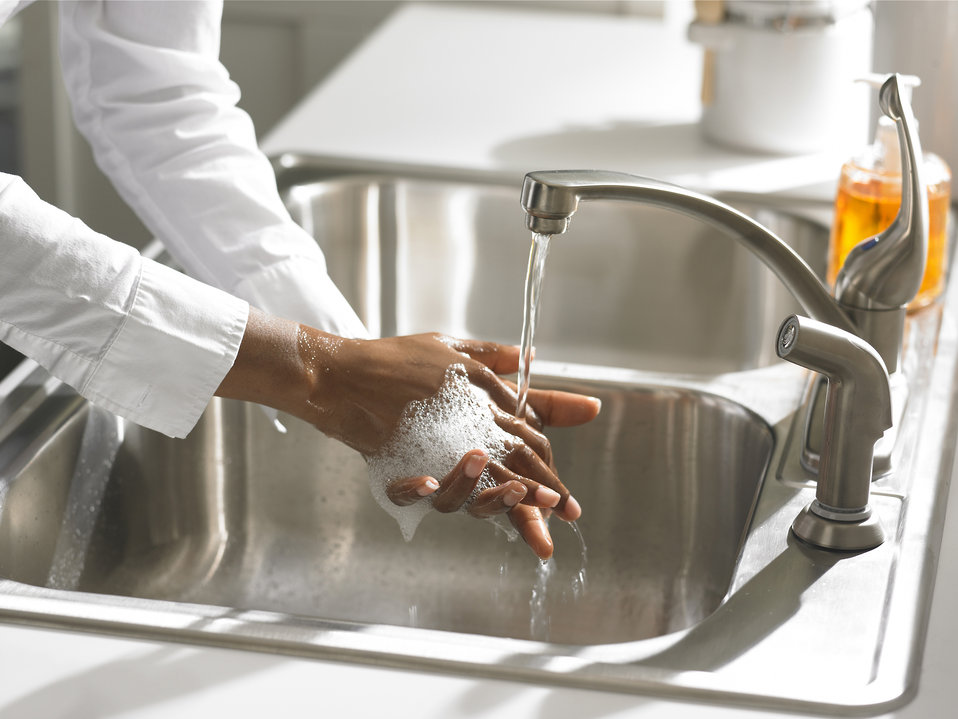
Hand washing after handling raw meat or poultry or its packaging is a necessity because anything you touch afterwards could become contaminated. Wash hands with warm water and soap for 20 seconds before and after handling food.